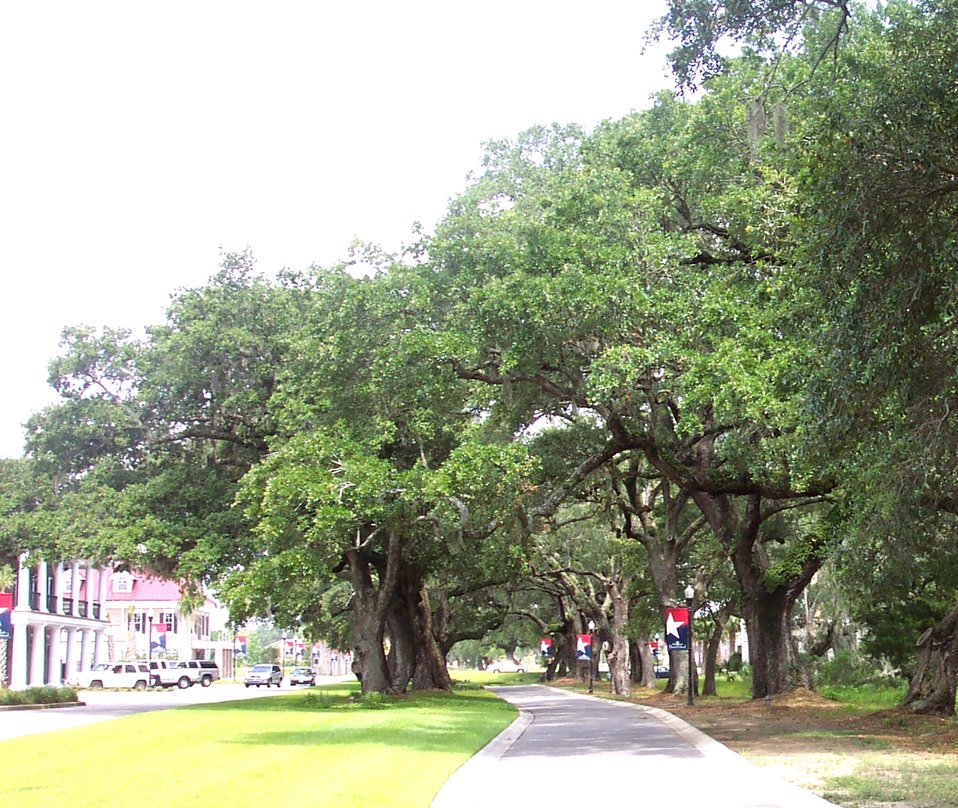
Giant oaks on Daniel Island.